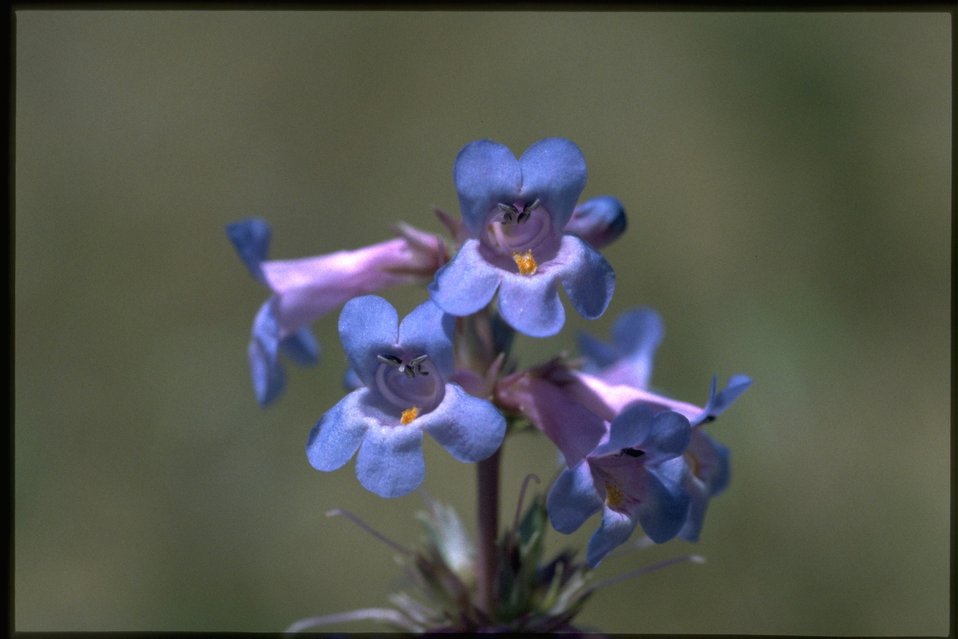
Closeup shot of Penstemon.